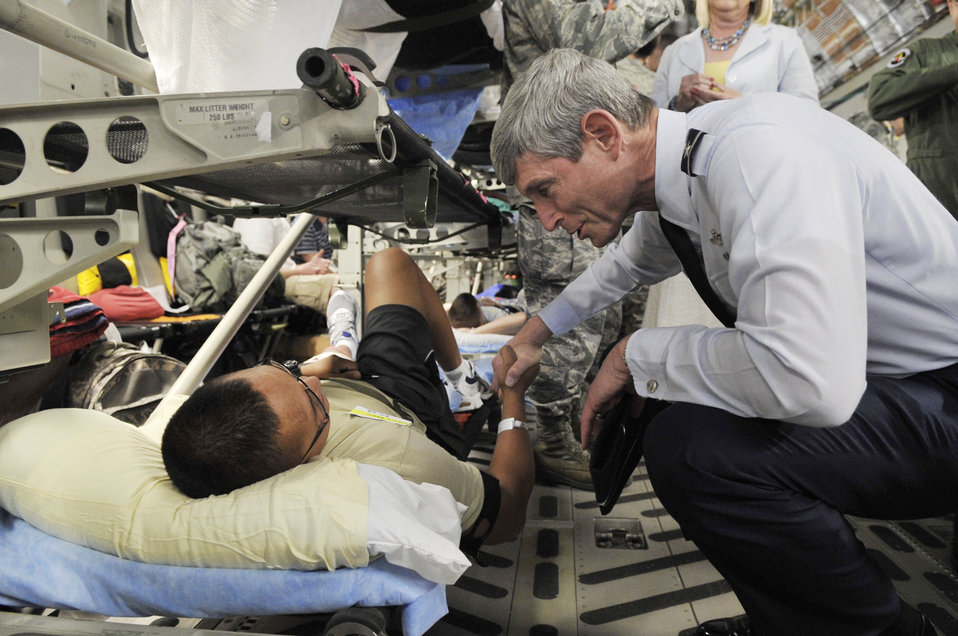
Get better soon

Air Force Chief of Staff Gen. Norton A. Schwartz talks with Senior Airman Bren Mejia during an aeromedical evacuation mission Aug. 7 on the Andrews Air Force Base, Md., flightline. The 779th Medical Group at Andrews has the busiest aeromedical staging facility in the continental United States, caring for more than 100 wounded and ill warriors returning each week.